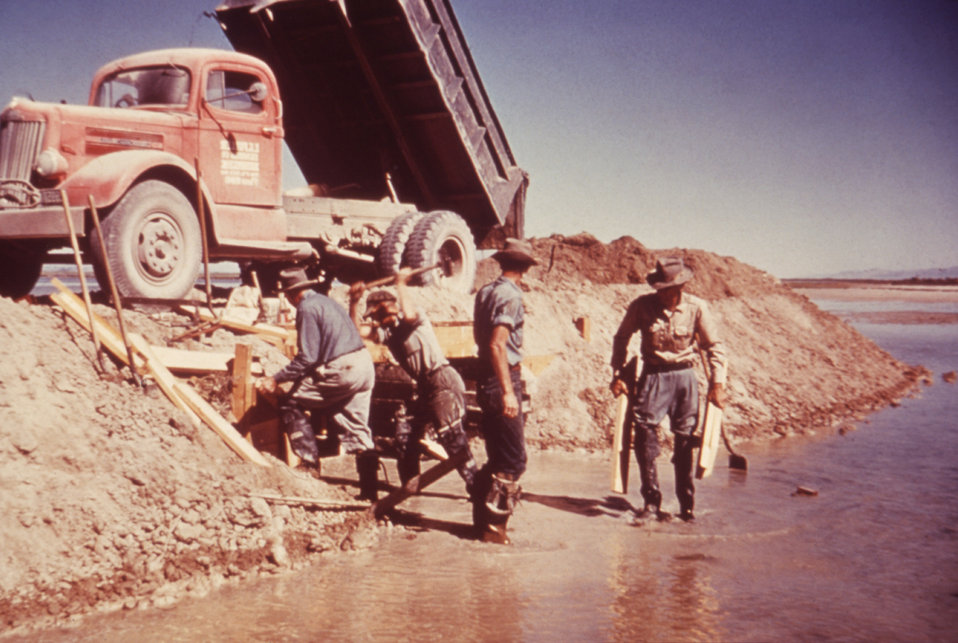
These men were constructing a dike and weir as part of the Wheeler Project in Utah during the mid 1970's.